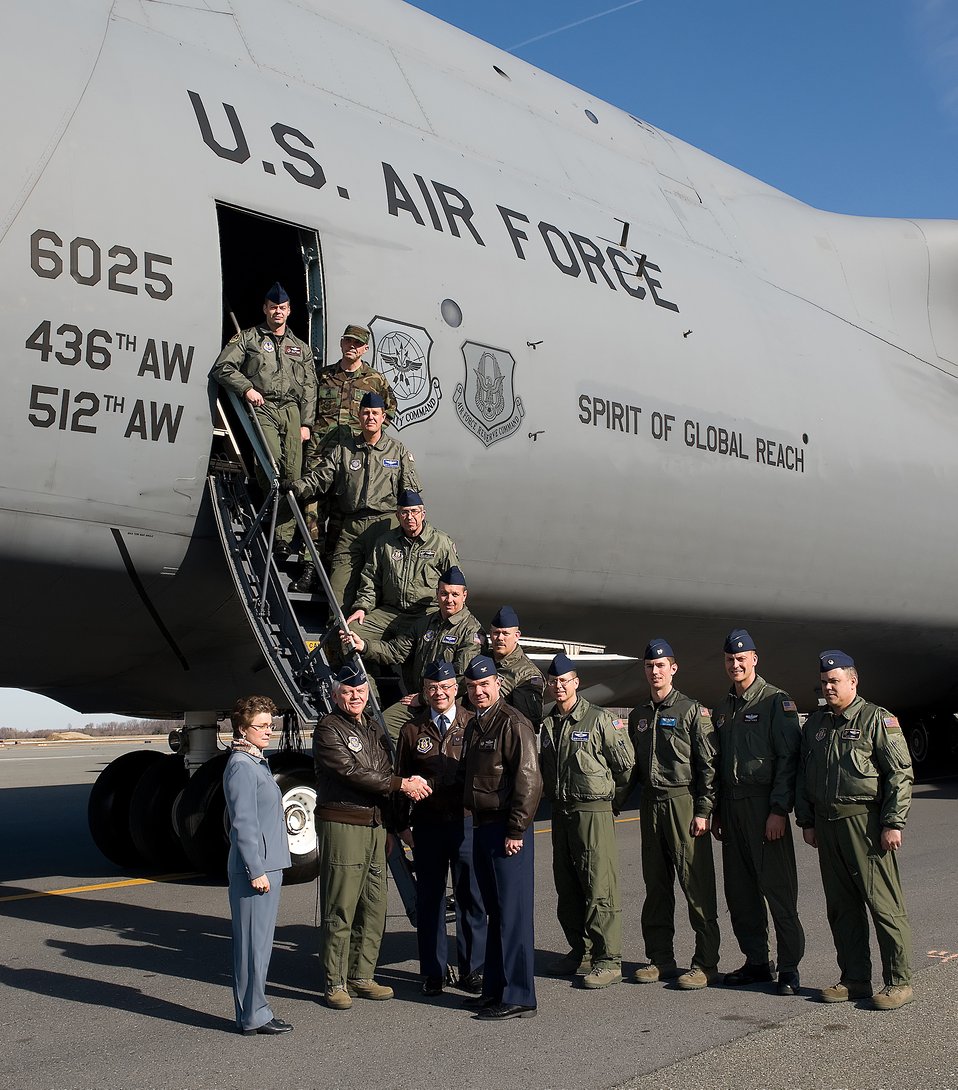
The Spirit of Global Reach, Team Dover's first C-5M Super Galaxy, was delivered Feb. 9. (Front, from right) Col. Manson Morris, 436th Airlift Wing commander, and Col. Randal Bright, 512th Airlift Wing commander, greet Gen. Arthur Lichte, Air Mobility Command commander and the delivery official for the C-5M, and Lorraine Martin, Lockheed Martin C-5 program vice president, while the delivery crew poses in the background at Dover Air Force Base, Del.